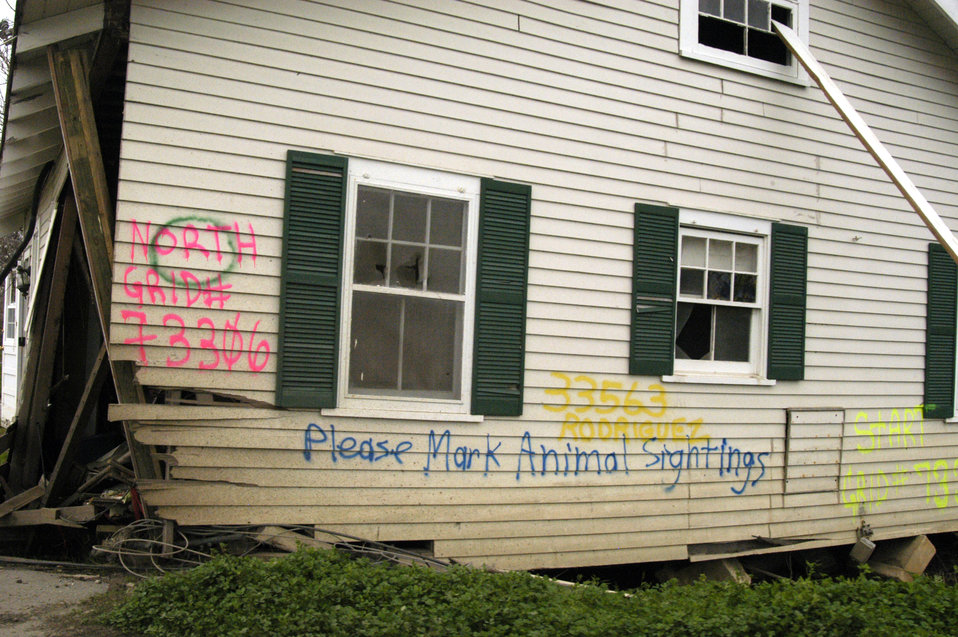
Homes in Plaquemines Parish, LA, were demolished by Hurricane Katrina’s 20-foot storm surge that overwhelmed the city’s levees. Hurricane Katrina was the 6th strongest hurricane in U.S. history and the 5th deadliest. Katrina made landfall on Monday morning, August 29, 2005 as a Category 3 hurricane with sustained winds of 125/mph with over a 20-foot storm surge. Katrina caused catastrophic damage over 90 thousand square miles across Louisiana with an estimated $75 billion dollars in damage. The total economic impact to the Gulf Coast was estimated at over $150 billion. 80% of New Orleans, LA, was underwater with some areas more than 20 feet deep. Less than a month later southern Louisiana was struck by a second Category 3 hurricane Rita inflicting more damage in the southwestern areas of Louisiana adding an addition $12 billion worth of damage to the already beleaguered state. The U.S. Army Corps of Engineers (USACE) under the auspices of the Federal Emergency Management Agency (FEMA) was the lead service in providing assistance to the citizens of Louisiana. The U. S. Department of Agriculture (USDA) supplied emergency food aid, emergency loan assistance to farmers and home owners, and USDA personnel from around the nation volunteered their time and muscle to aid in the recovery operations.